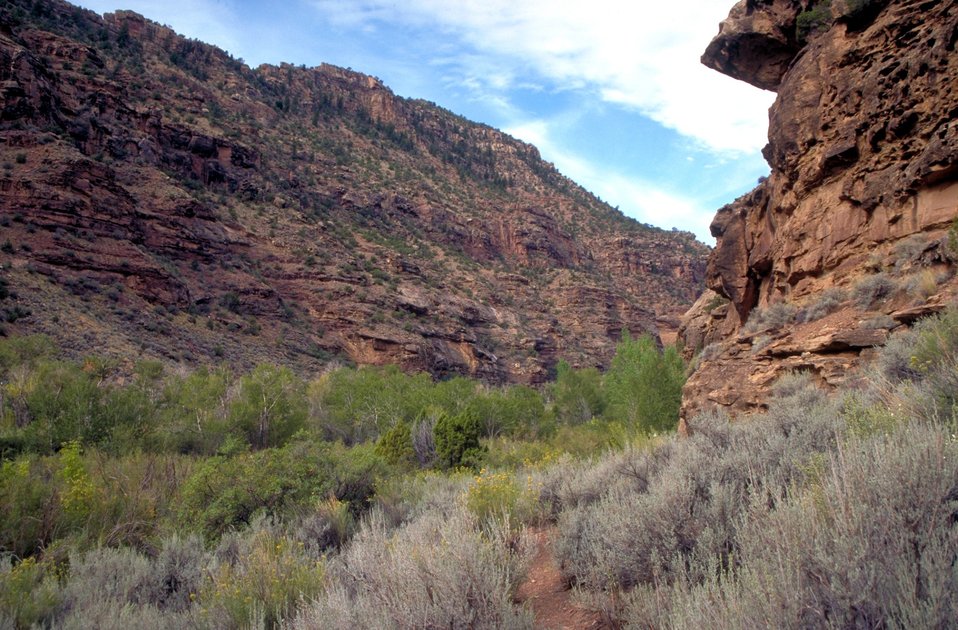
Desolation/Gray Canyons near Price, Utah.